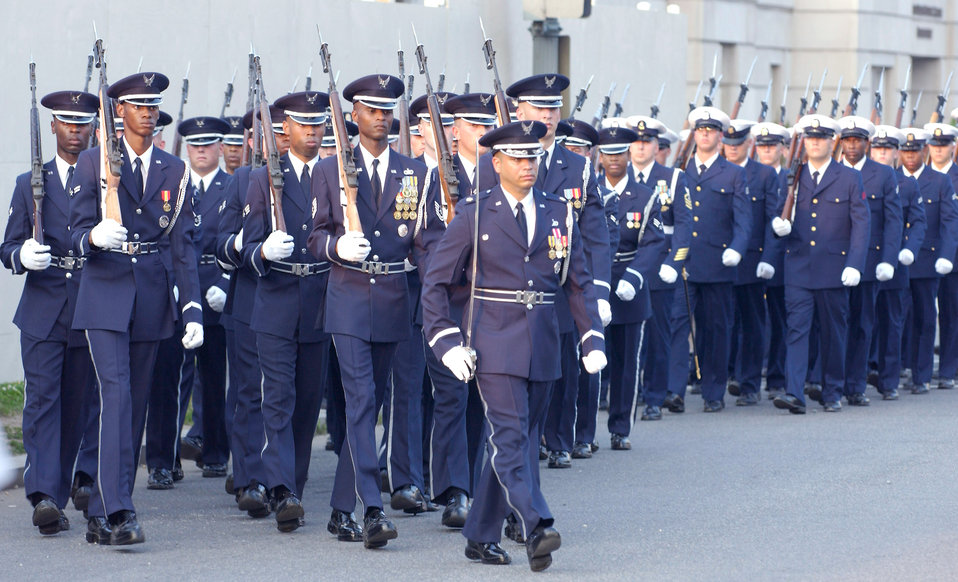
A solemn journey

WASHINGTON (AFPN) -- Air Force Honor Guard members march from the U.S. Capitol following former President Ronald Reagan's funeral procession here June 9. President Reagan will lie in state in the Capitol Rotunda until June 11. He served as the military's commander-in-chief from 1981 to 1989.